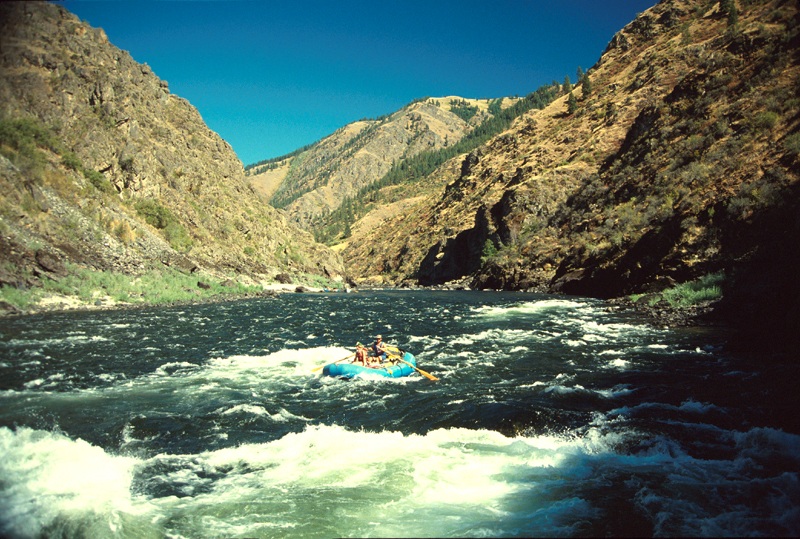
Rafting Cottonwood Field Office UCSC Upper Columbia Salmon Clearwater District